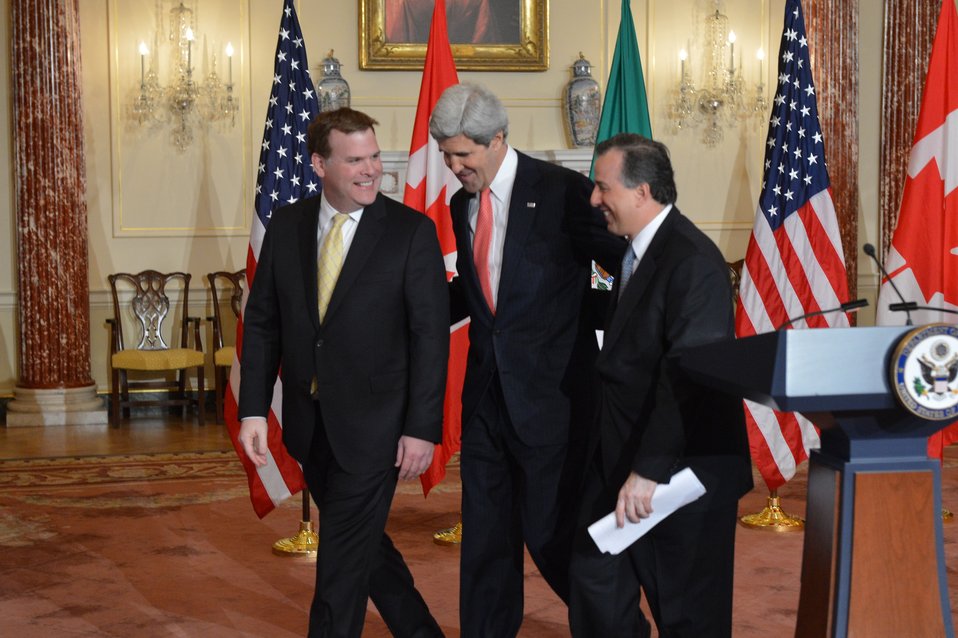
Secretary Kerry, Canadian Foreign Minister Baird, and Mexican Foreign Secretary Meade Share a Laugh

U.S. Secretary of State John Kerry, Canadian Foreign Minister John Baird, and Mexican Foreign Secretary Jose Antonio Meade share a laugh after addressing reporters during the North American Trilateral Ministerial at the U.S. Department of State in Washington, D.C., on January 17, 2014.